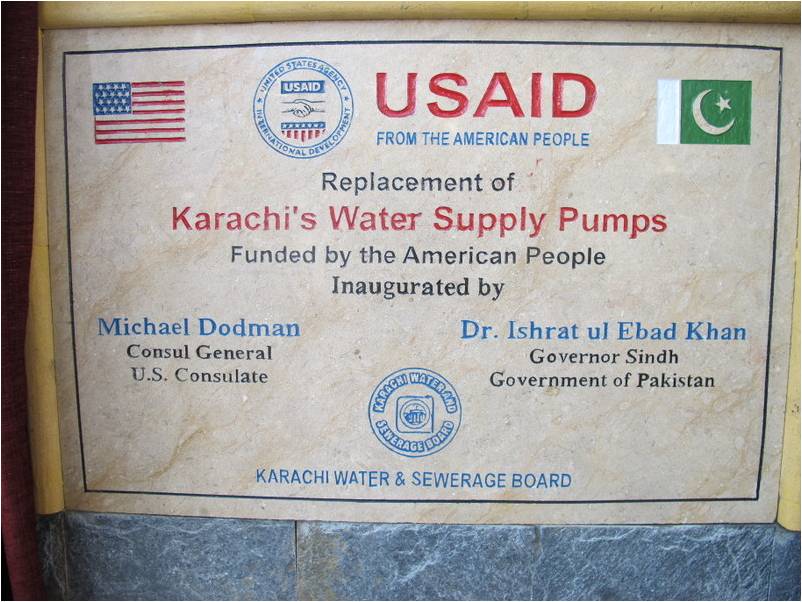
Inauguration Plaque